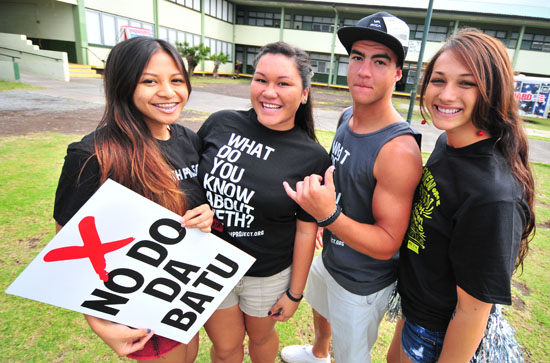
Hawaii Meth Project, NDFW 2013

Konawaena, Hawaii. In conjunction with National Drug Facts Week (Jan. 28-Feb. 3), the Hawaii Meth Project and it’s Teen Advisory Council member Mahealani Yoshida hosted “Blackout Meth Day” on Wednesday, Jan. 30 at Konawaena High School to raise awareness about the “Not Even Once” message.